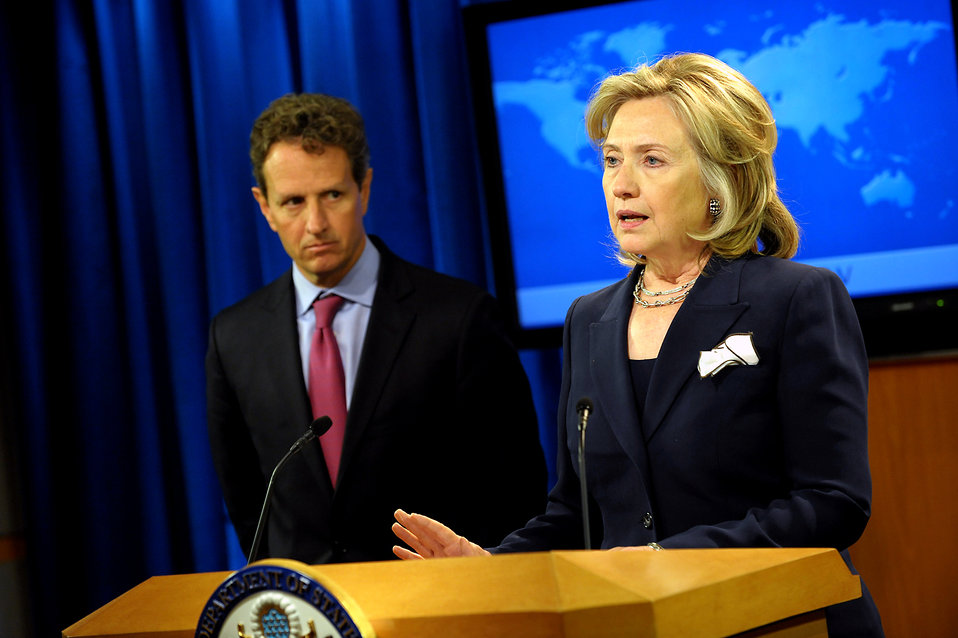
Secretary Clinton and Secretary Geithner Deliver an Announcement of an Executive Order on on Human Rights Designations

U.S. Secretary of State Hillary Rodham Clinton and U.S. Secretary of the Treasury Timothy Geithner deliver a press announcement, announcing an executive order on Human Rights Designations in the Press Briefing Room at the U.S. Department of State in Washington, D.C., on September 29, 2010.